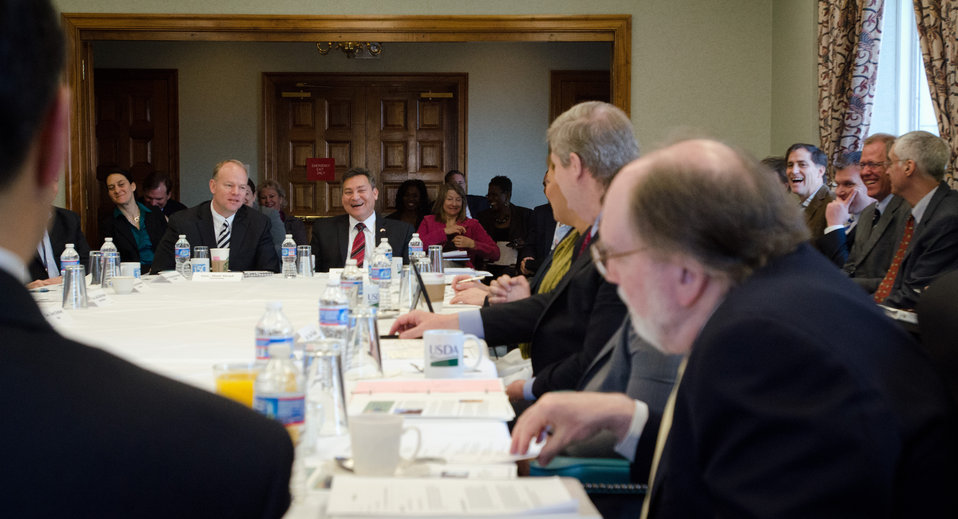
Wyoming - Governor Mat Mead (left, black and white tie) opened with a comment about the earlier breakfast before he presented issues that are important his state, to Agriculture Secretary Tom Vilsack, Interior Secretary Ken Salazar, Environmental Protection Agency Administrator Lisa Jackson, and Council on Environmental Quality Chair Nancy Sutley, who are in the Lincoln Room, of the United States Department of Agriculture headquarters, in Washington, D.C., on Sunday, February 26, 2012.